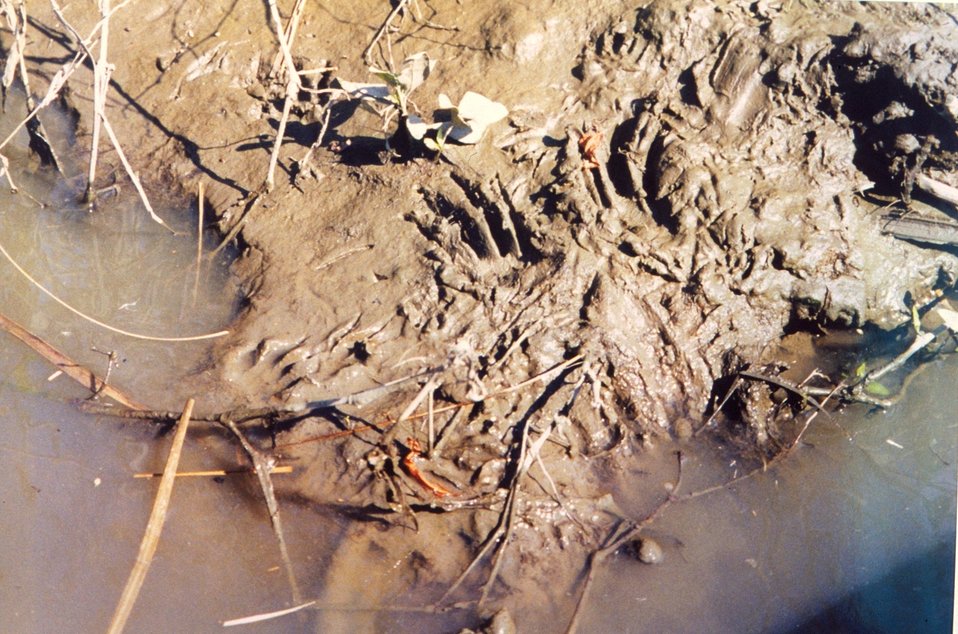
Footprints in the mud of a Patuxent River marsh, possibly muskrat.